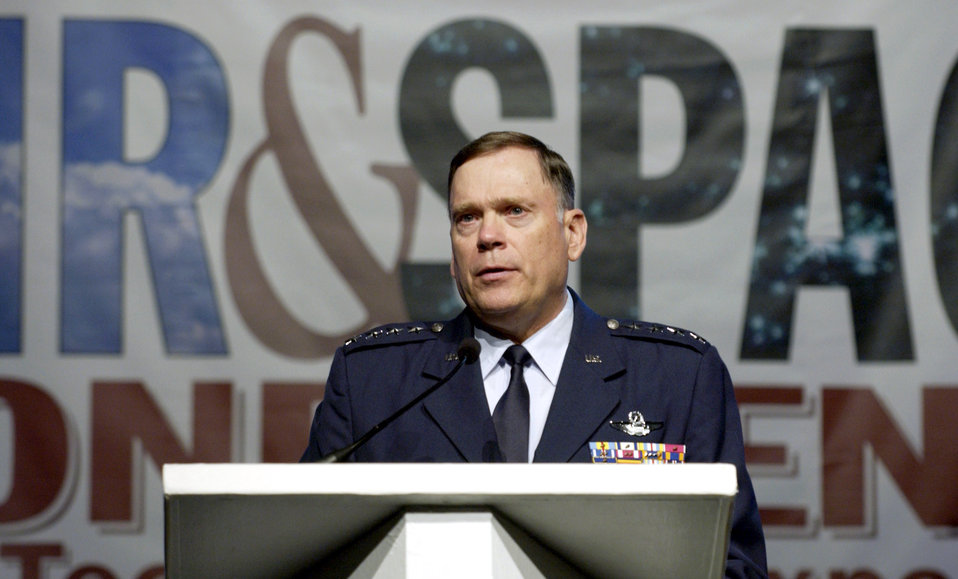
Creative Airmen shape tomorrow's Air Force today

WASHINGTON -- Air Force Chief of Staff Gen. John P. Jumper spoke to people attending the Air Force Association's 2004 Air and Space Conference and Technology Exposition here. He said creative Airmen today will shape tomorrow's Air Force.